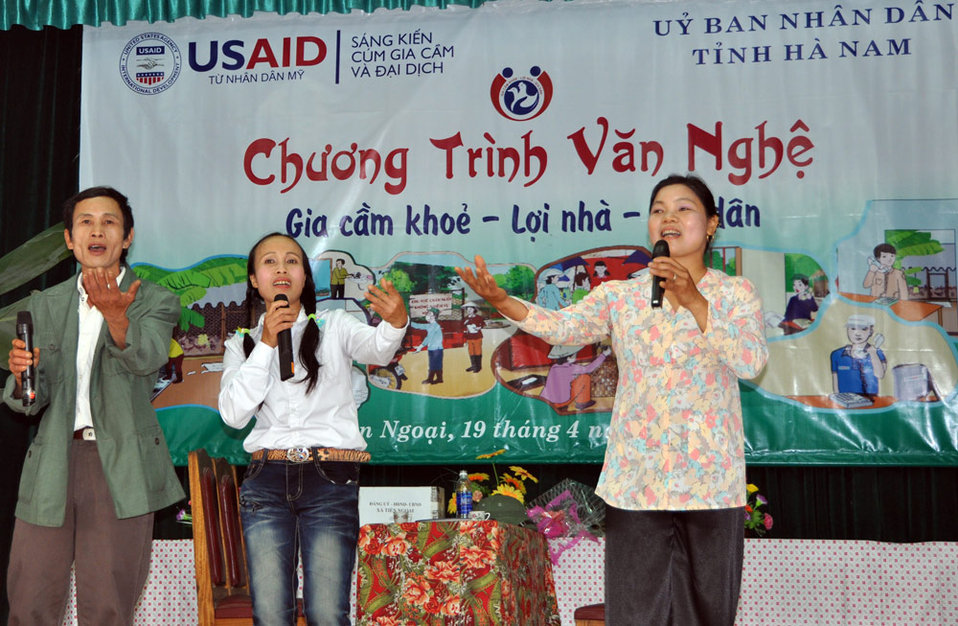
Residents in Vietnam's Tien Ngoai Commune, Duy Tien District, Ha Nam Province, discuss ways to prevent and control avian and pandemic influenza.